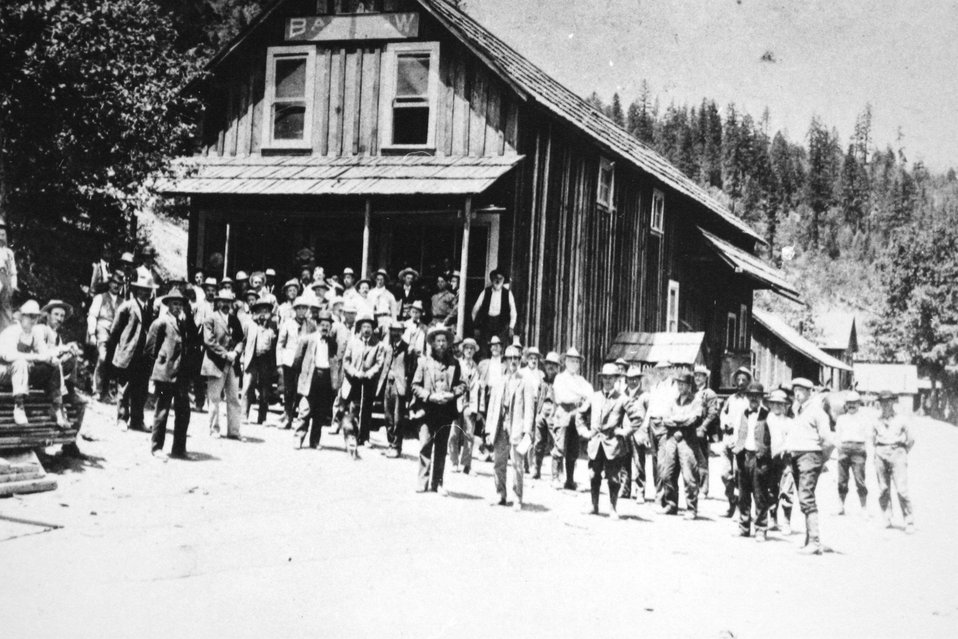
Barlow Brotehrs Store at Galice C. 1909